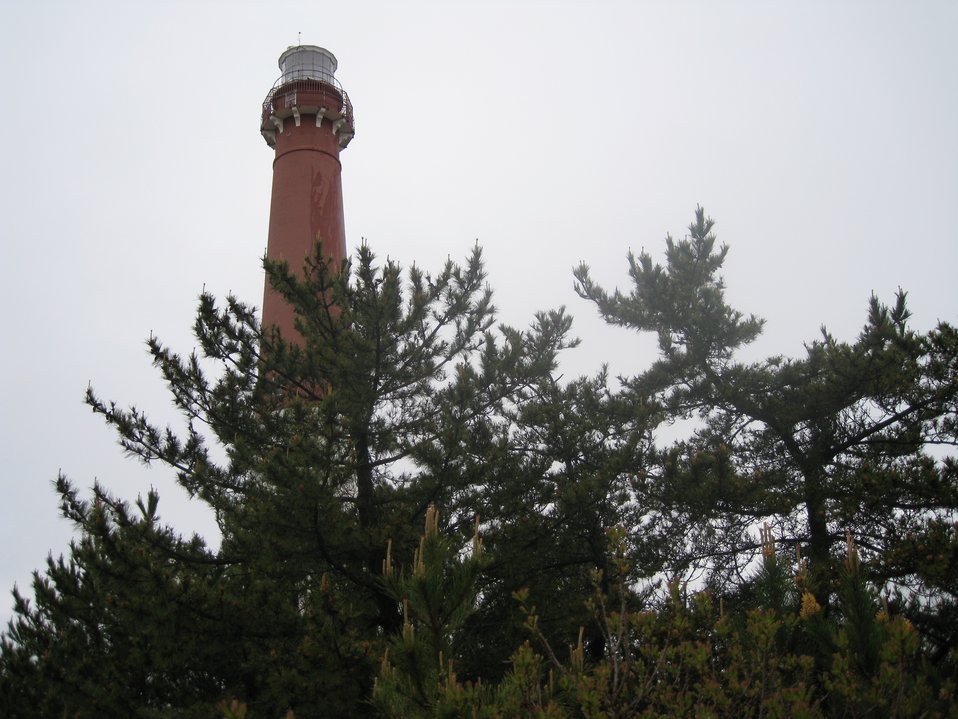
Barnegat Lighthouse